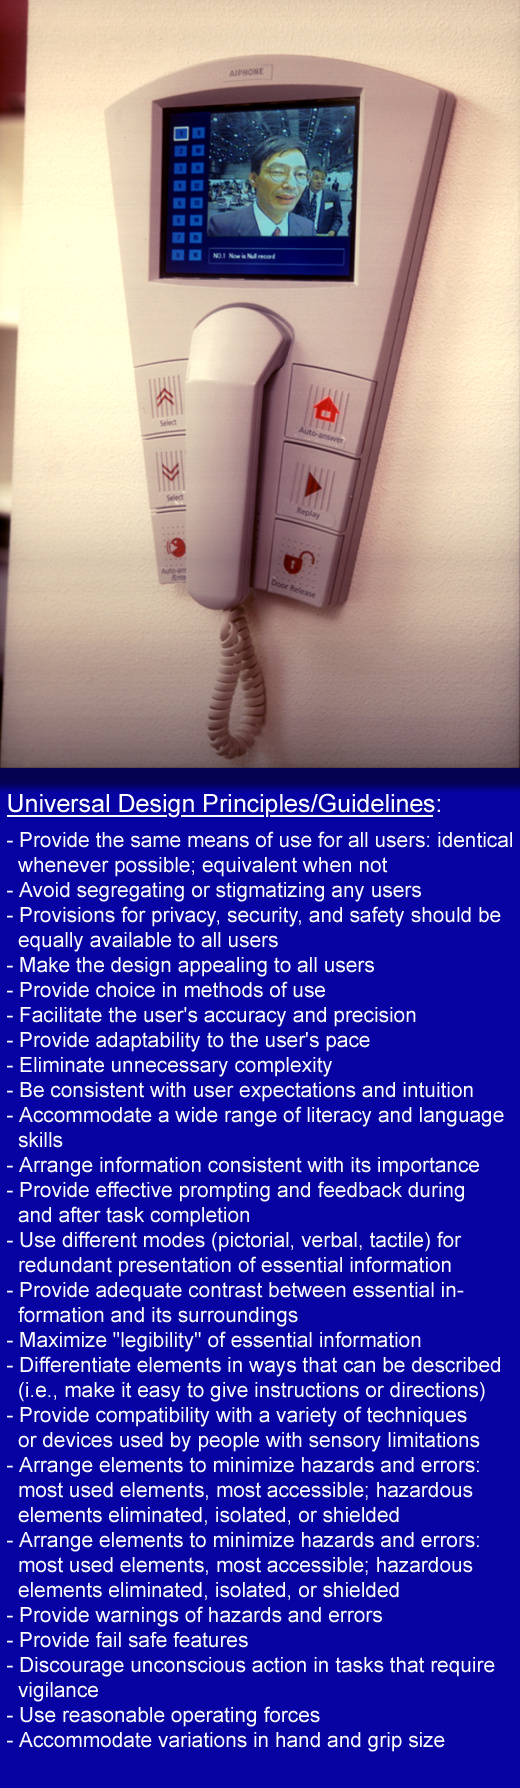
PHIL# 9108 - 9112 depicted the Aiphone� Universal Video Entry System, a prototypical video phone designed to allow residents to identify visitors before granting entrance, and to allow them to monitor communication without having to go to the master station should moving be slow, difficult, or undesirable at that time. The system's features include visual, tactile, and audible feedback offering an unusually high degree of redundancy in conveying information, while its Video Entry System offers security and convenience to all users, especially those who live alone.By moving the cursor key, then pushing the Auto-Answer button, a resident may select a message from the monitor's prerecorded message group to respond to visitors. This conveys the synthesized voice message to the visitor, a function extremely useful for someone who has difficulty speaking. If not at home, the system can video-record a visitor's image and voice, and later deliver a pre-selected audio message.